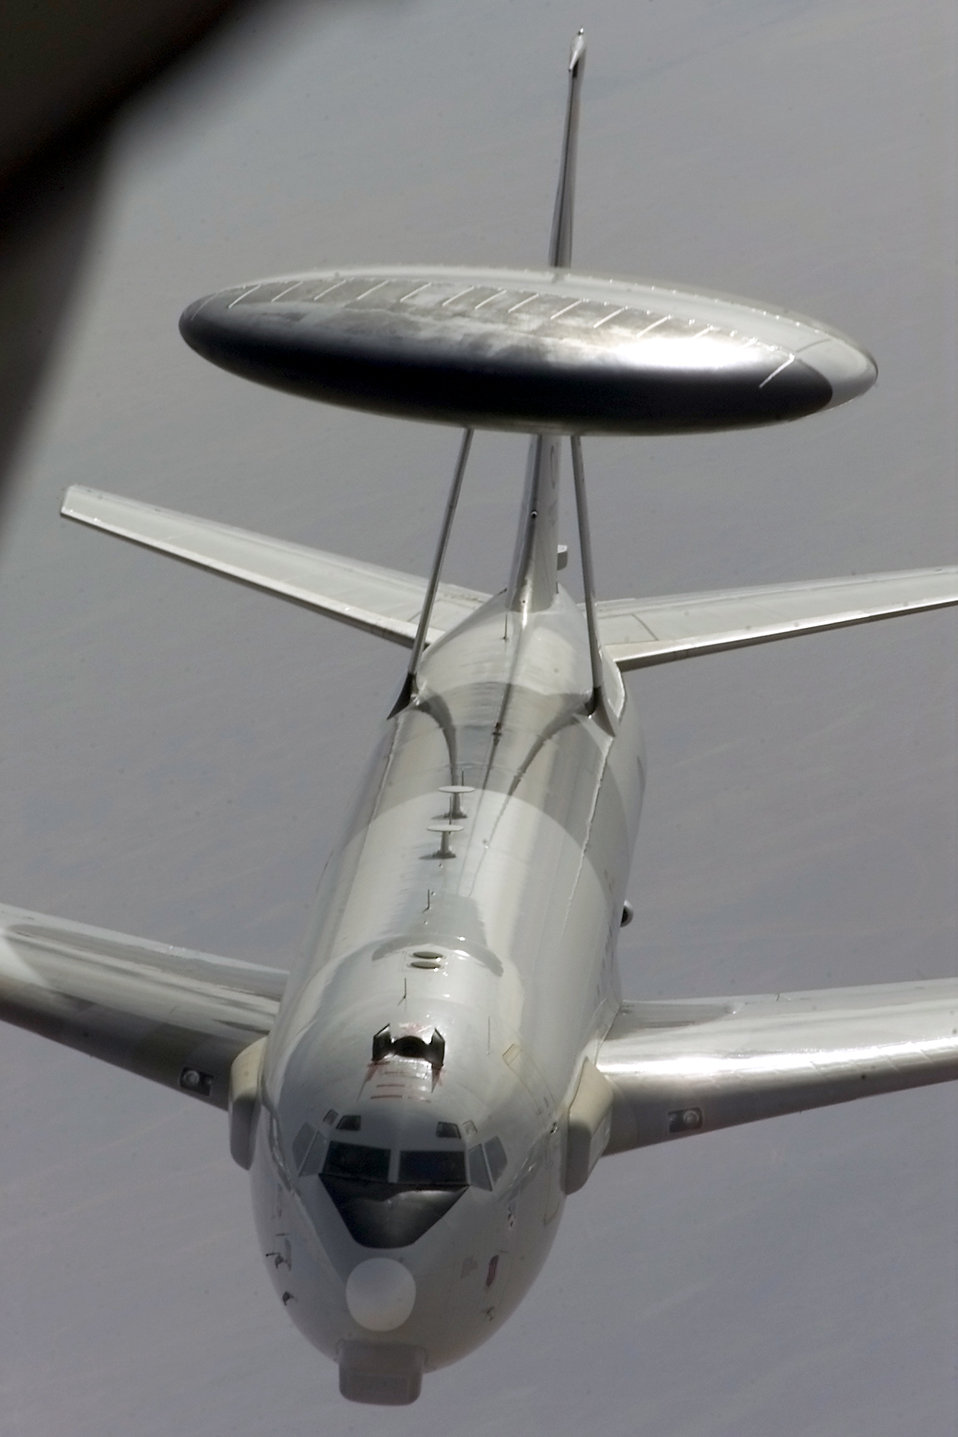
Sentry in flight

FILE PHOTO -- A Tinker Air Force Base, Okla., E-3 Sentry prepares for its in flight refueling. This is the latest model of the E-3 with its new 30/35 modifications and radar improvements. The Block 30/35 Modification Program is the largest single upgrade in the aircraft's history, including four enhancements: the Electronic Support Measure, the Joint Tactical Information Distribution System upgrade, computer upgrades and the Global Positioning System modification.